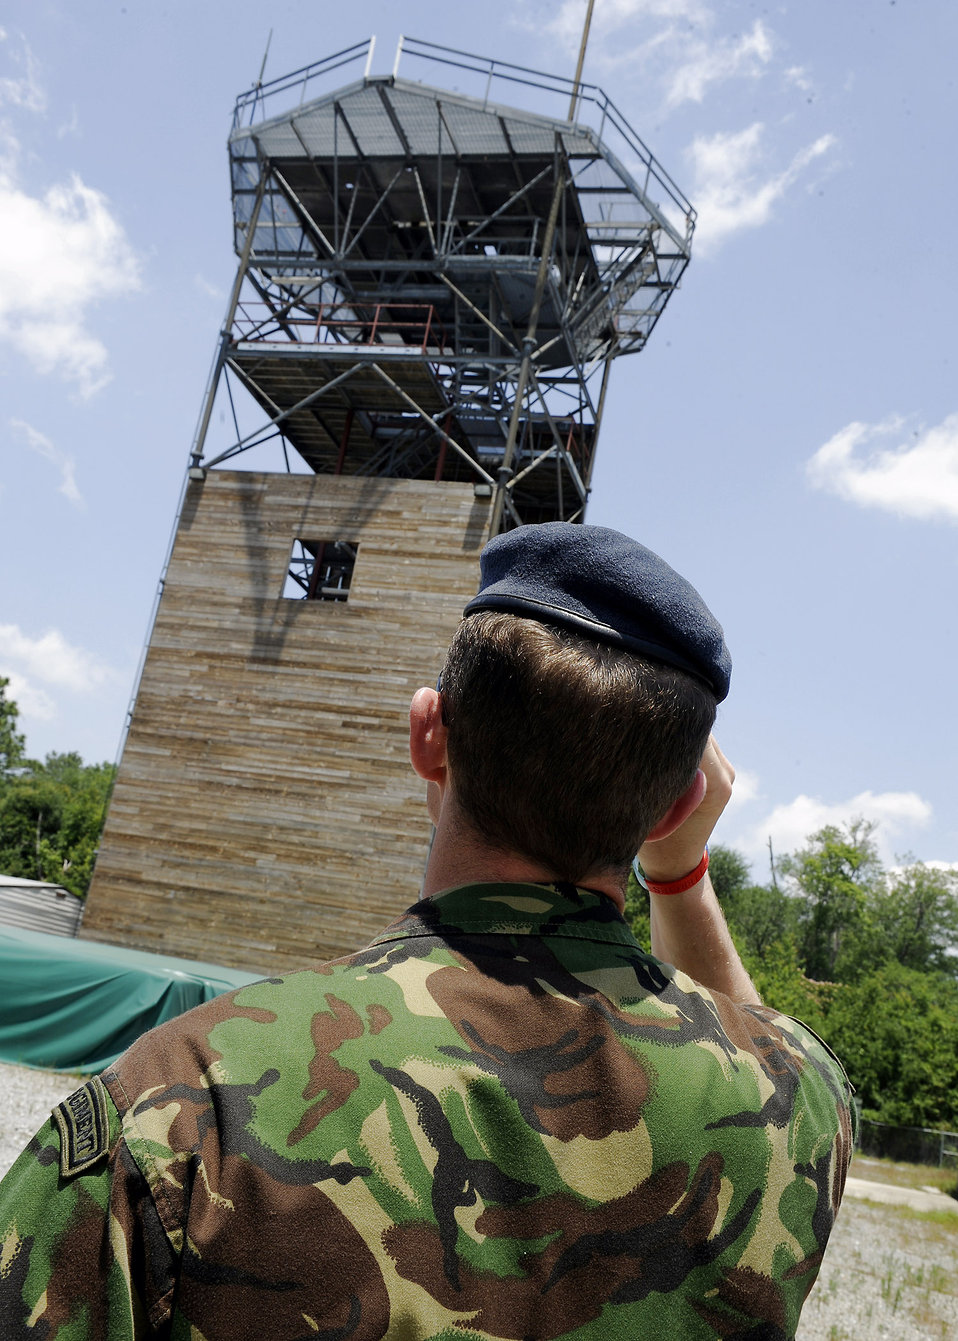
RAF officers spin-up on 820th SFG roles, mission, training

Royal Air Force Flight Lt. Dave Martin, RAF Honington Force Protection Centre, looks at a rappel tower used by the 820th Security Forces Group for training purposes at Moody Air Force Base, Ga., May 20. Members of the RAF came here to tour and learn about the 820th SFG mission.